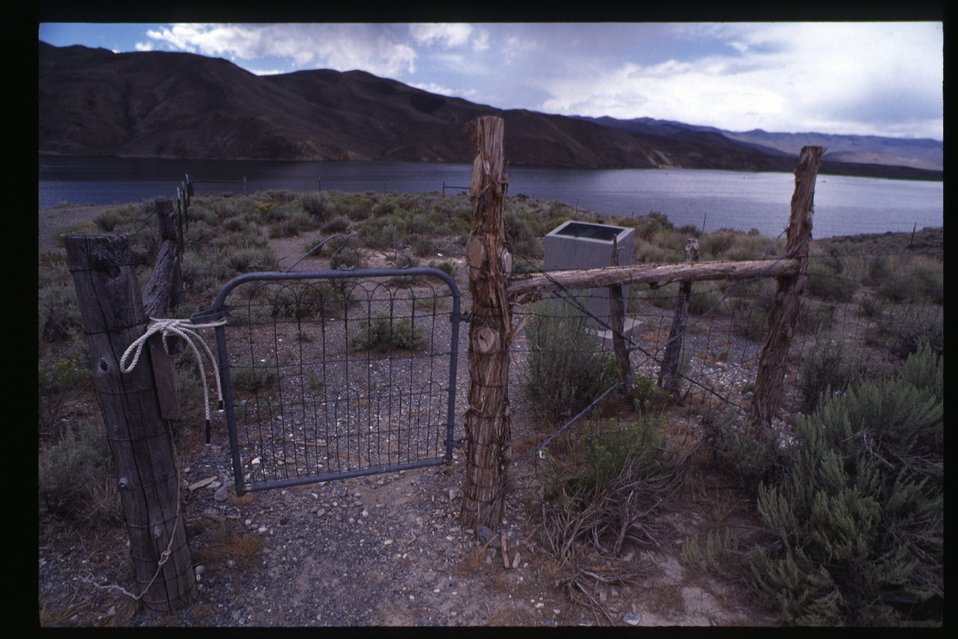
Scenic at Mackay Reservoir Battleground, Pioneer Cemetery Challis Field Office UCSC Upper Columbia Salmon Clearwater District